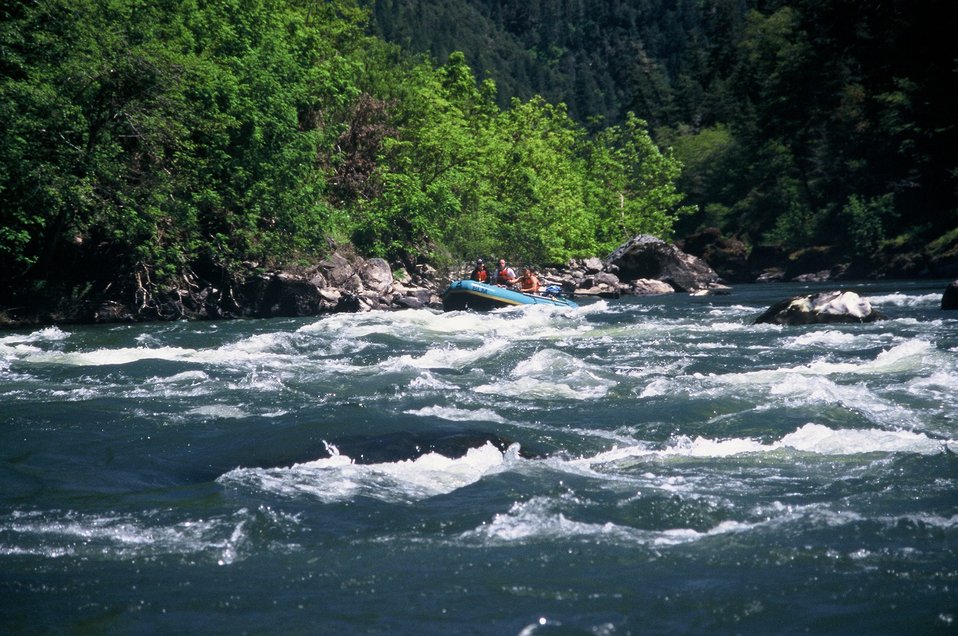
Wild section of the Rogue River from Grave Creek to Foster Bar May 19 to May 22.